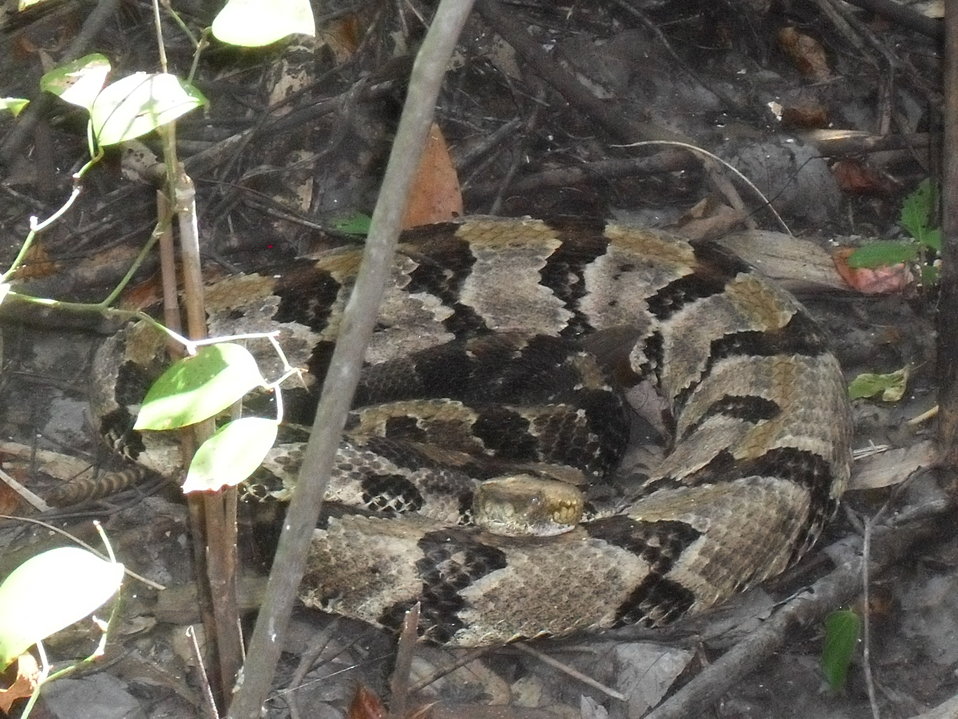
Firefighter hazards.

Suffolk, VA, August 2011: A firefighter on the Lateral West Fire at Great Dismal Swamp National Wildlife Refuge encountered this timber rattlesnake, known locally as the canebrake rattlesnake.